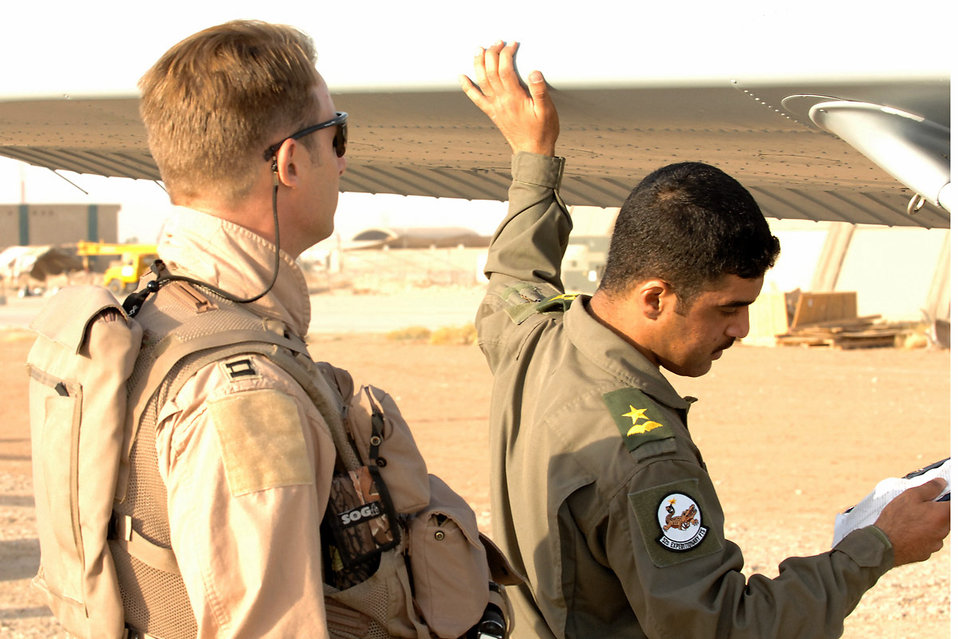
Iraqi air force reaches 2,000-hour milestone

Capt. Jamie Riddle, a 52nd Expeditionary Flying Training Squadron instructor pilot, and 2nd Lt.